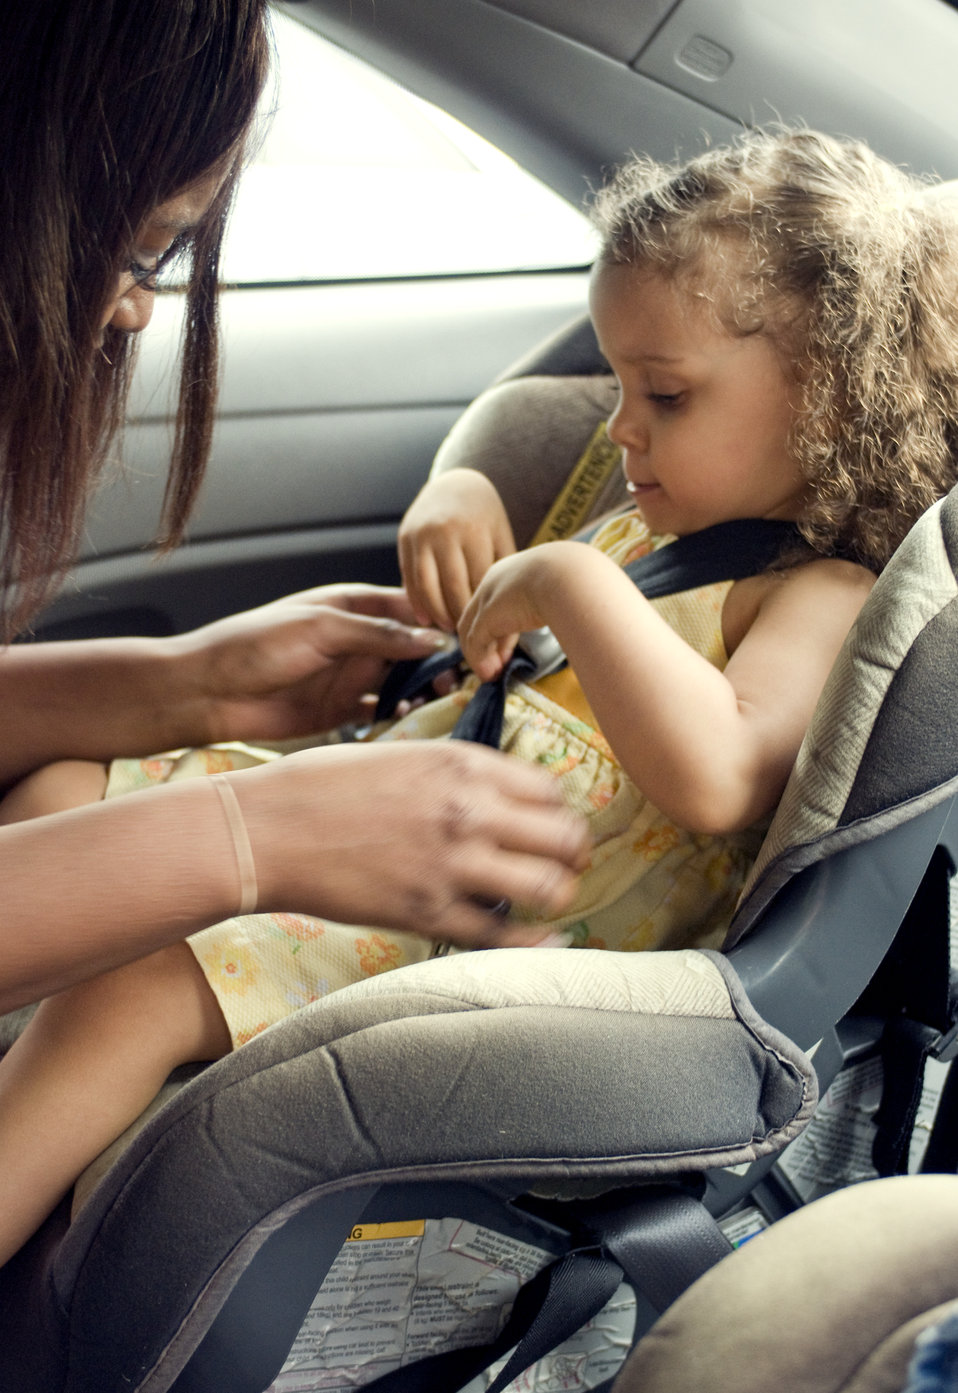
This image depicts a mother in the process of securing her young daughter into her back seat-located child safety seat. At this point of the process, she was adjusting her daughter's fit in the seat, ensuring both her safety and comfort.